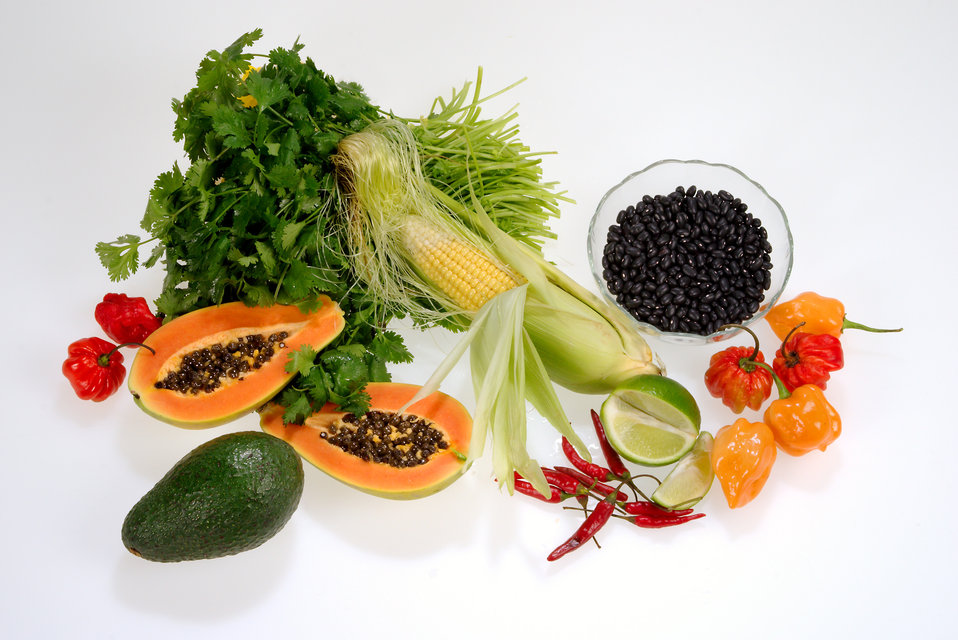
Healthy fruits and vegetables

This image depicts a grouping of healthy fruits and vegetables, including an ear of corn, papaya, avocado, habenero and chili peppers, black beans, a lime, and cilantro.